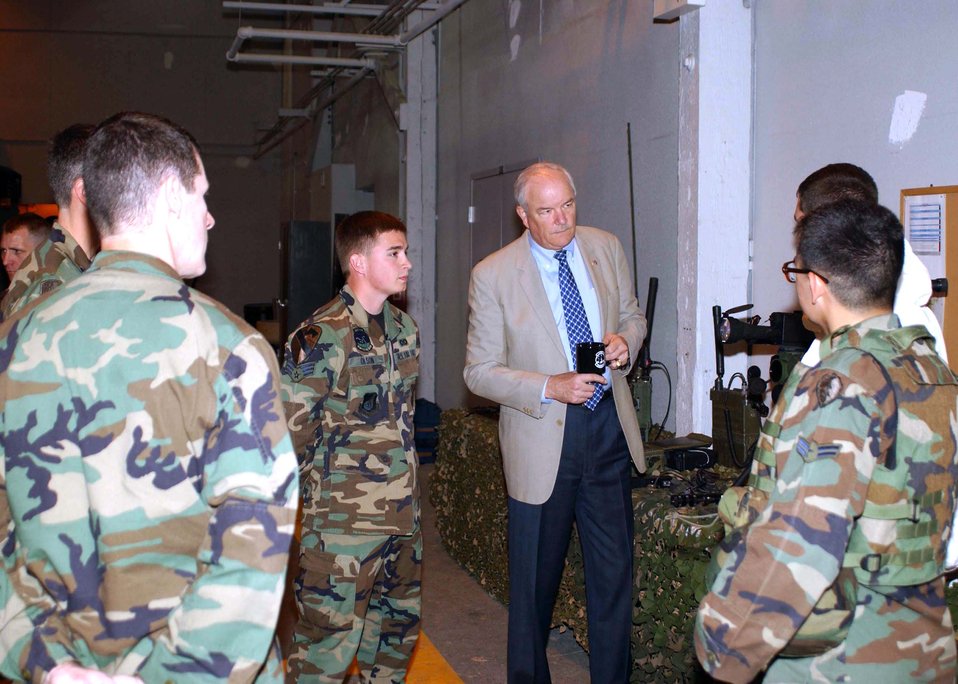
SECAF sees bright future for Eielson Airmen

Secretary of the Air Force Michael W. Wynne speaks to Airmen of the 3rd Air Support Operations Squadron May 9 at Fort Wainwright, Alaska. The 21st secretary of the Air Force toured the Pacific Region to introduce his top priorities for the Air Force -- winning the war on terrorism, fostering mutual integrity and respect, and revitalizing the service's aging infrastructure and fleet.